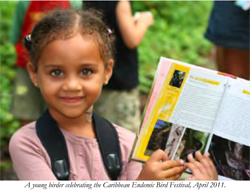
SCSCB-FWS-Interim-Report-2011